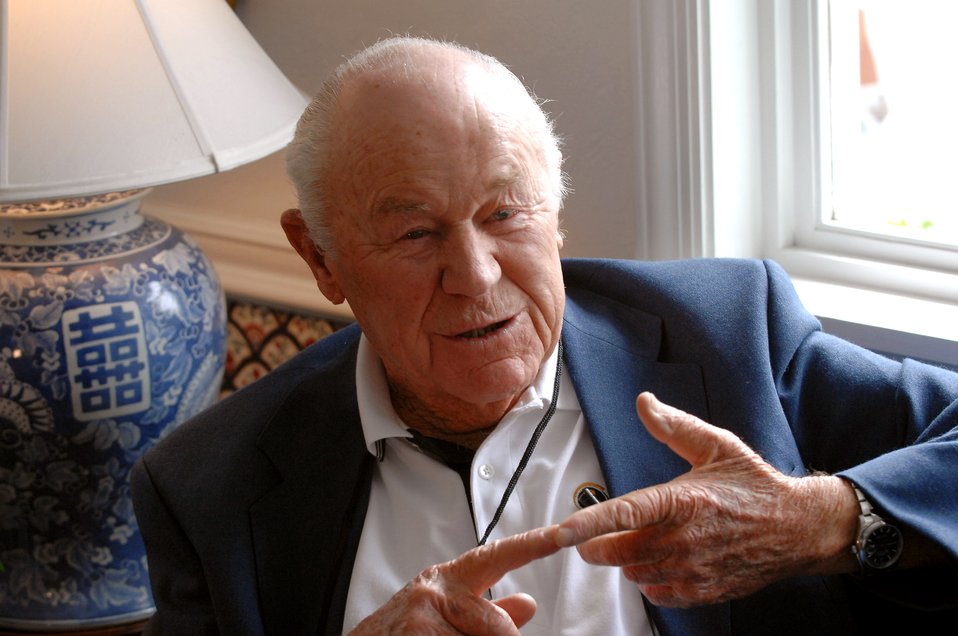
Pilot inducted into women's aviation hall of fame

Retired Brig. Gen. Charles E.